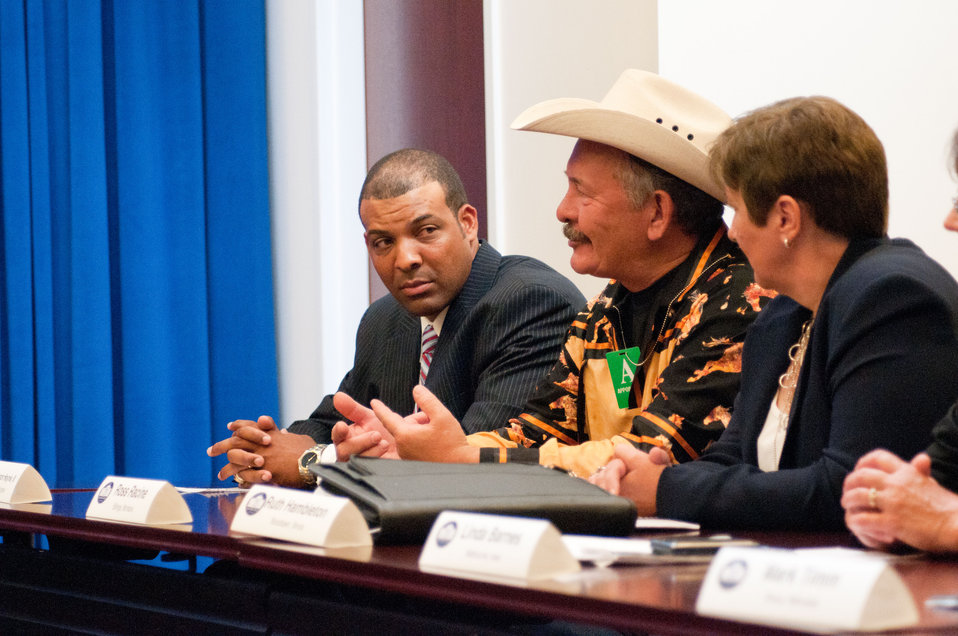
Ross Racine (second from right), Intertribal Agriculture Council, MT, attended a meeting at the White House, in Washington, DC, on July 6, 2011. He was asked to participate along with President Barack Obama, Agriculture Secretary Tom Vilsack, the President's Domestic Policy Adviser Melody Barnes and rural communities leaders from across the country for the White House Rural Champions of Change event to strengthen rural communities and promote economic growth. Ross Racine is the Executive Director of Intertribal Agriculture Council (IAC). He assumed those duties in January 2001. He served as the IAC Natural Resources Director beginning in 1991, and as the IAC Director of Programs since 1999.
Ross is a Blackfeet Indian, veteran of the USMC, and has spent many years working on farms and ranches in the Browning, Montana area. He earned his Bachelor of Science degree in Agriculture/Animal Science in 1982 at Montana State University. His professional career began with the Bureau of Indian Affairs in Browning, Montana as a Soil Conservationist working with Indian livestock producers on the Blackfeet Reservation. He received a Northwest Regional Award of the Intertribal Timber Council for his work on models for Tribal planning on land use. Ross’ entire professional career has been spent working with Indian farmers and ranchers in the development and management of their resources and he has extensive cross-cultural experience.
He serves on the NRCS Chiefs Reinvention Forum Executive Committee, the Chief’s team regarding negotiation of the NRCS-Conservation District agreements; the early SCS Harmony workshops, and is co-chairman of the BIA’s writing team on regulation creation for resource planning required under PL103-177. Other involvements include National Agriculture Statistics Service Advisory Committee, Extension Indian Reservation Program Advisory Committee, Indian Land Tenure Foundation Board Member, Chairman of the Agriculture Committee for the National Congress of American Indians and also serves on his local school board.